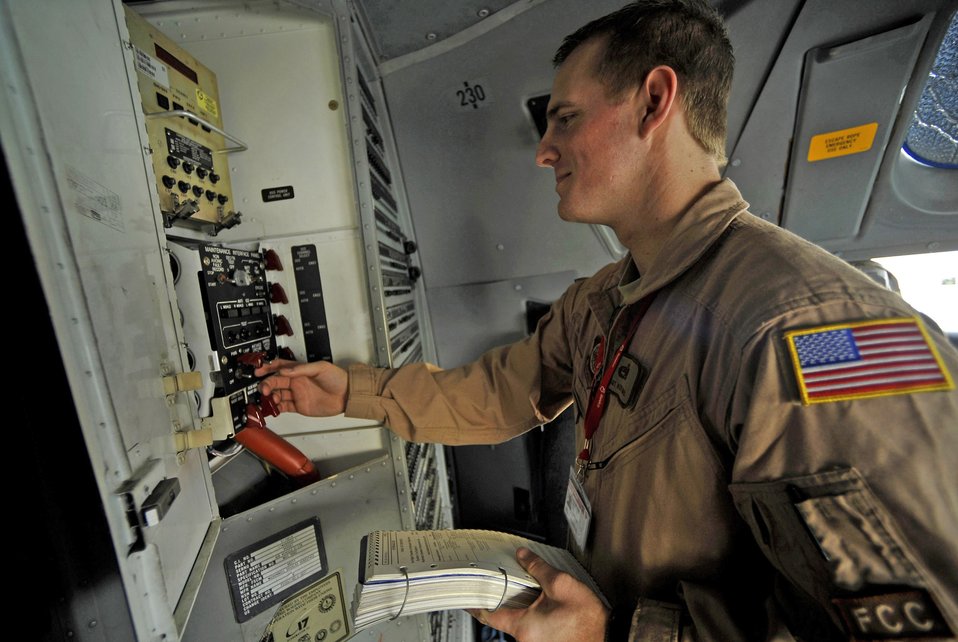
Maintainers keep airplanes flying during Bahrain International Airshow

Staff Sgt. Ken Travis troubleshoots a communication system on a C-17 Globemaster III, Jan. 22, 2010, during the Bahrain International Airshow. Sergeant Travis is a flying crew chief with the 437th Aircraft Maintenance Squadron.